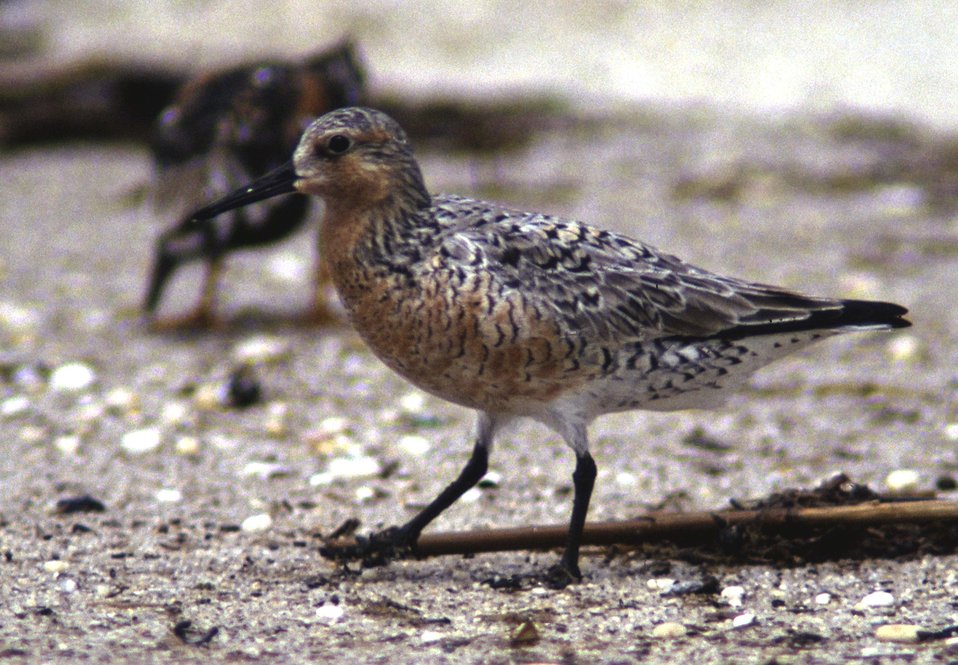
Red Knot